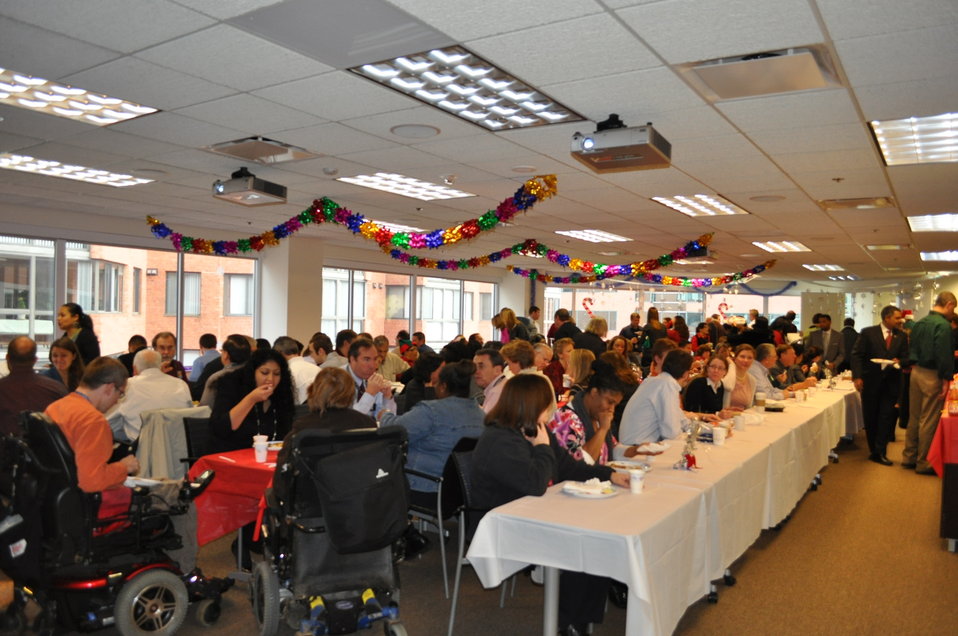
breakfast with 400 friends